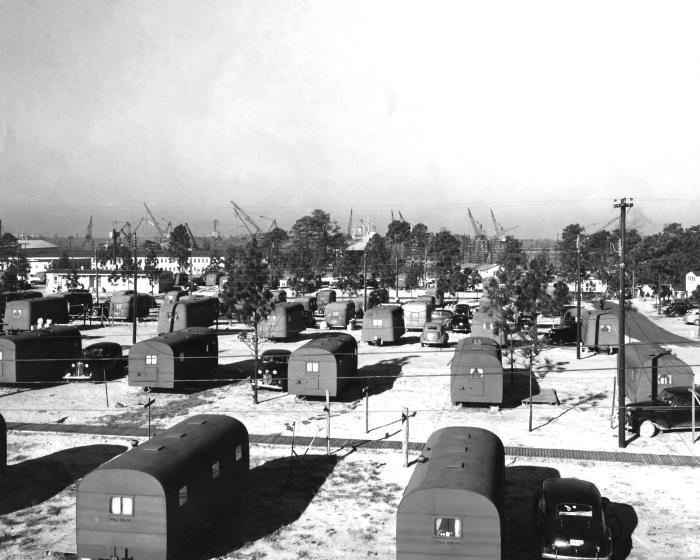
Provided by the Center for Disease Control's (CDC), National Institute for Occupational Safety and Health (NIOSH), this historic 1943 image depicted an aerial view of a North Carolina workcamp trailer park, which was located onsite at an industrial workplace.